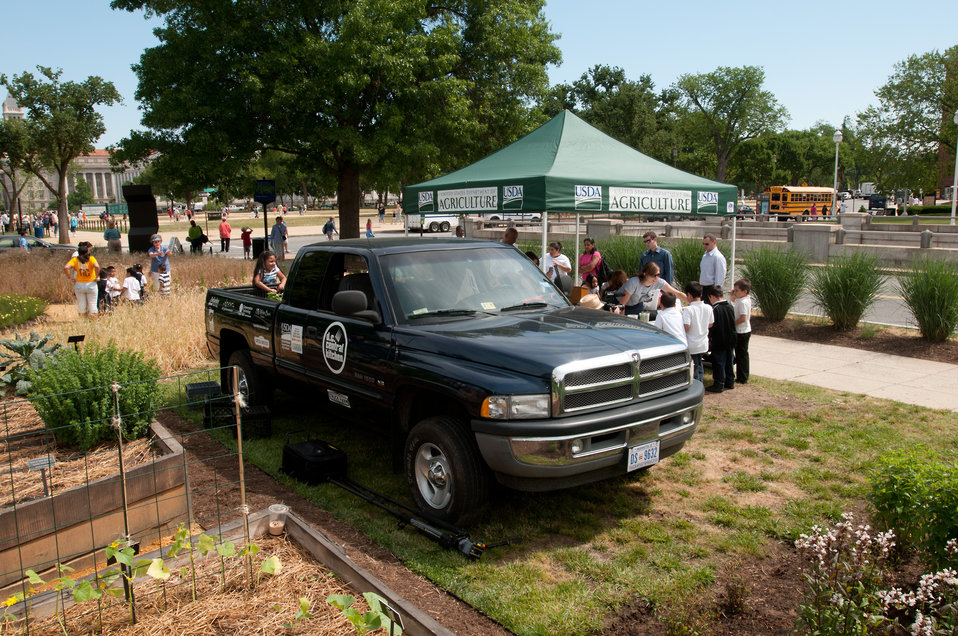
DC Central Kitchen Truck at the opening day of the USDA Farmers Market on Friday, June 3, 2011 in Washington, DC. The USDA Farmers Market is located at the corner of 12th Street and Independence Avenue and will be open every Friday from 10:00 a.m. - 2:00 p.m. through November 18th. Special events will be happening every Friday at the market and at the People's Garden all season.